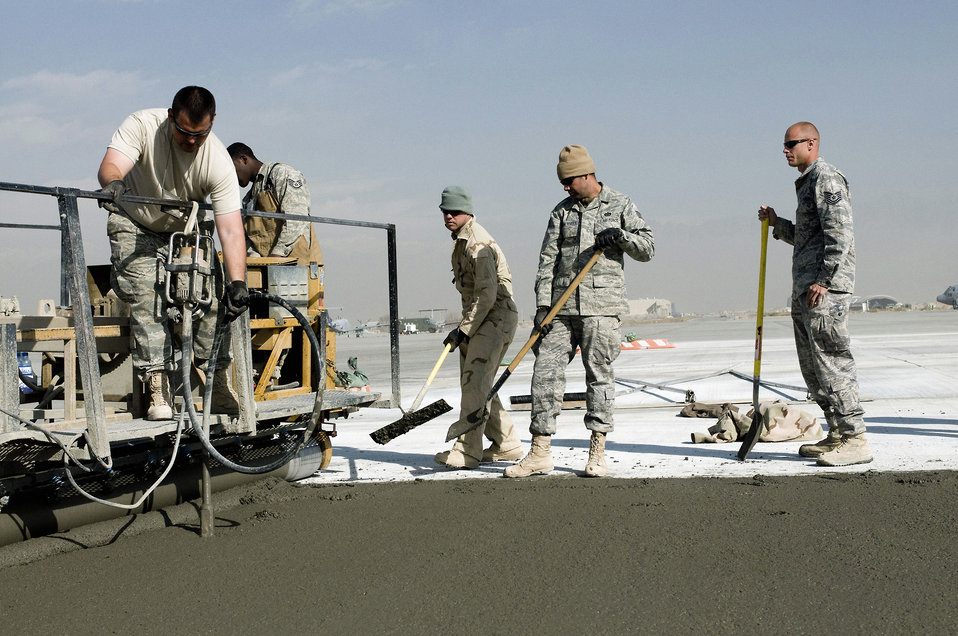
Civil engineer crews improve Bagram infrastructure

Airmen of the 455th Expeditionary Civil Engineer Squadron lay concrete on Thanksgiving Day at Bagram Airfield, Afghanistan. Taking advantage of every day possible to lay concrete, the Airmen expanded the flightline before cold weather makes laying the temperamental concrete impossible.